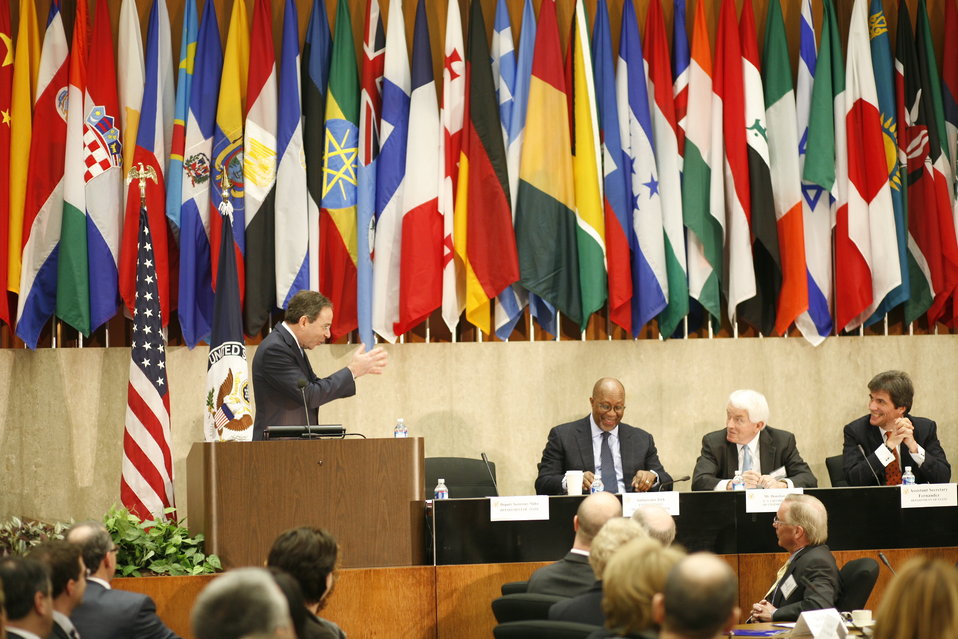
Deputy Secretary Nides Delivers Remarks

Deputy Secretary of State Thomas Nides delivers remarks at the first-ever State Department Global Business Conference at the U.S. Department of State in Washington, D.C., on February 21, 2012. Also pictured in the photo, seated from right to left: U.S. Trade Representative Ron Kirk, President and CEO of the U.S. Chamber of Commerce Thomas Donohue, and Assistant Secretary of State for Economic and Business Affairs Jose Fernandez.